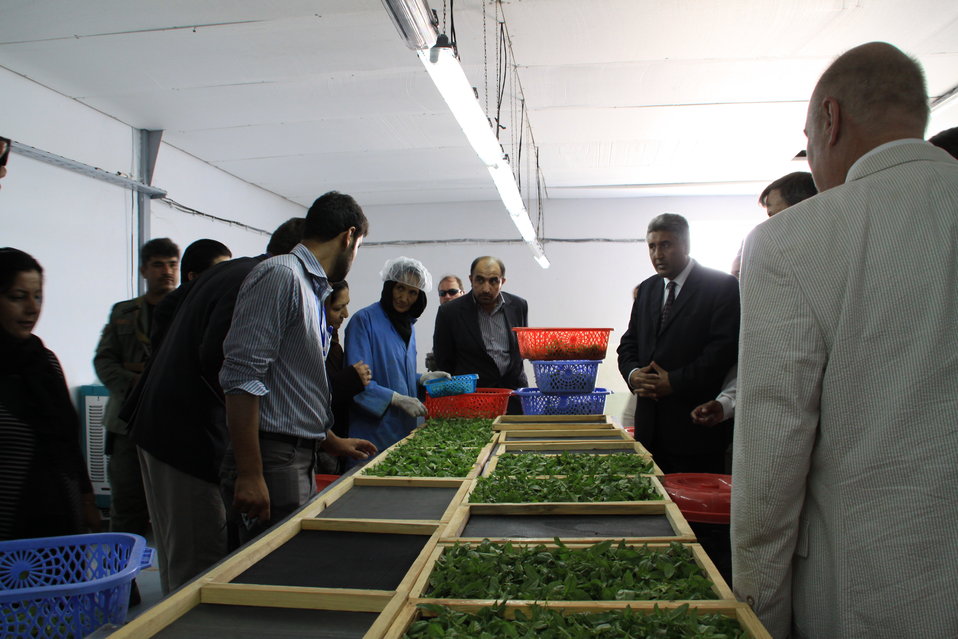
Badam Bagh Farm